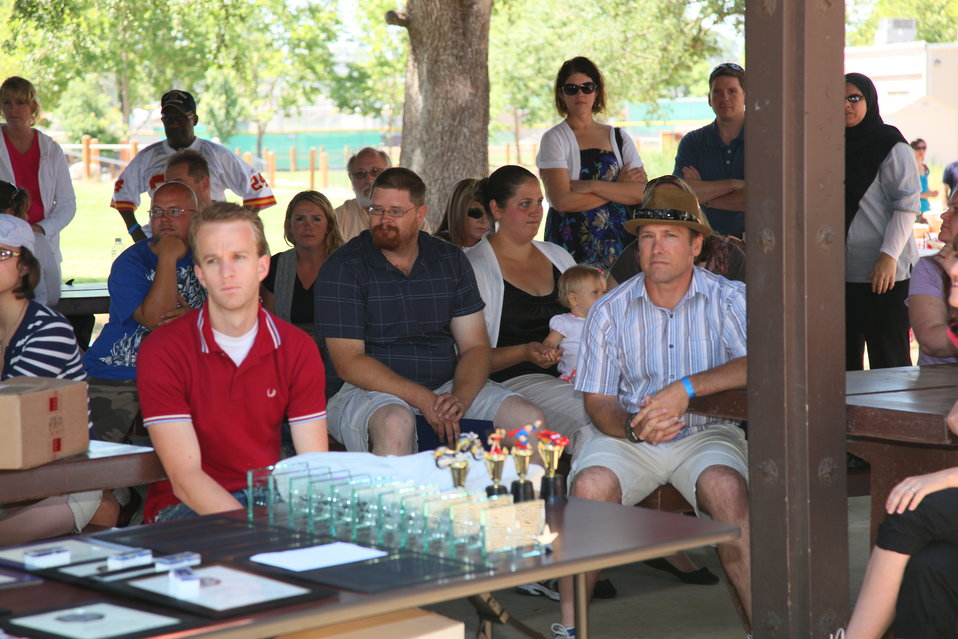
2011 Annual Picnic